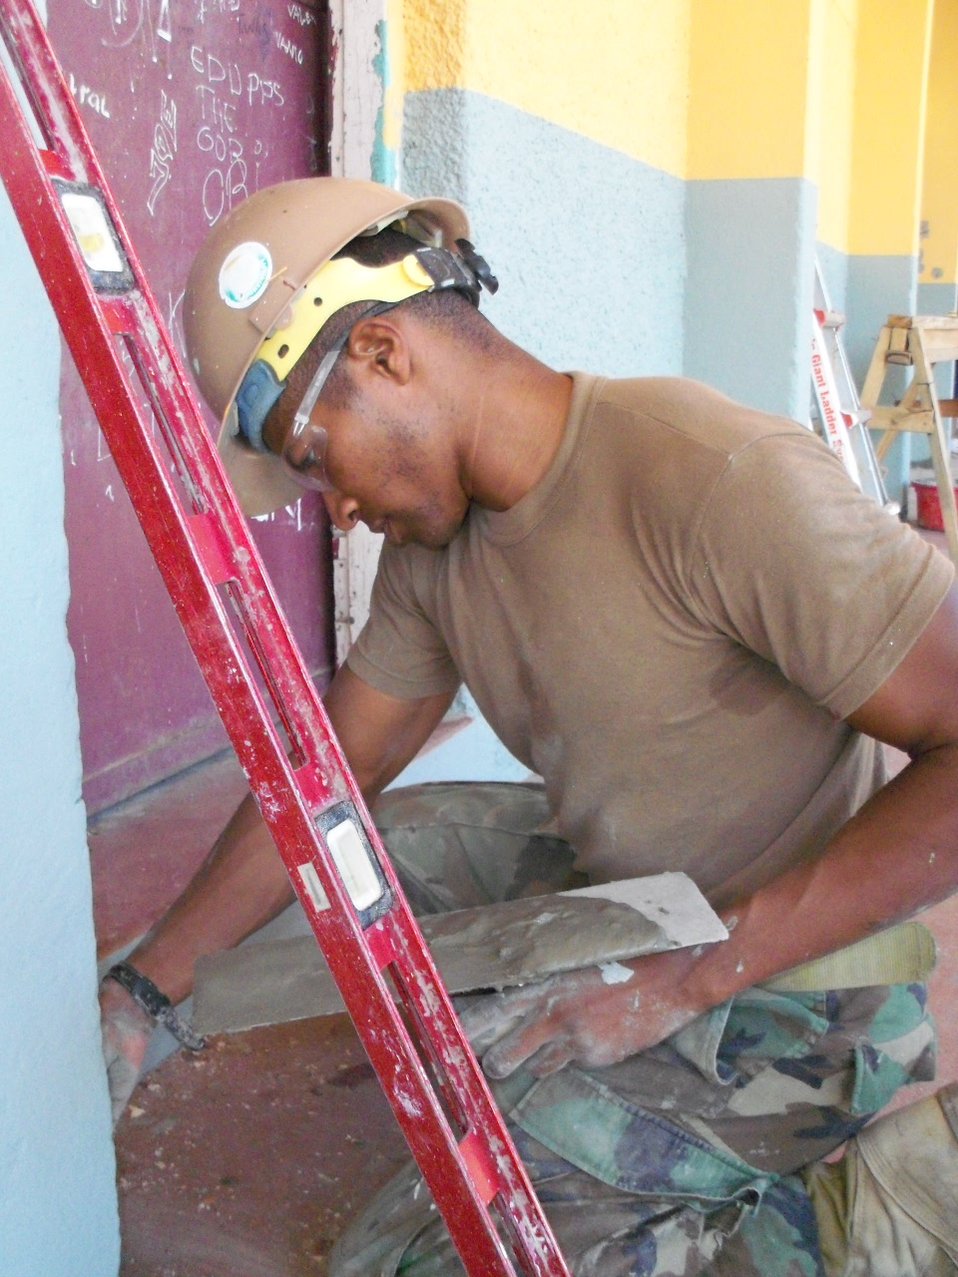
Builder 3rd Class Williams Spreads a Thin Layer of Plaster Outside of the Classroom Walls

Builder 3rd Class Roylander Williams, assigned to Naval Mobile Construction Battalion (NMCB) 11, spreads a thin layer of plaster outside of the classroom walls at the EP Nu Laran School engineering site in Dili, Timor-Leste, on July 29, 2010. The renovation project is part of Pacific Partnership 2010, the fifth in a series of annual U.S. Pacific Fleet humanitarian and civic assistance endeavors aimed at strengthening regional partnerships.